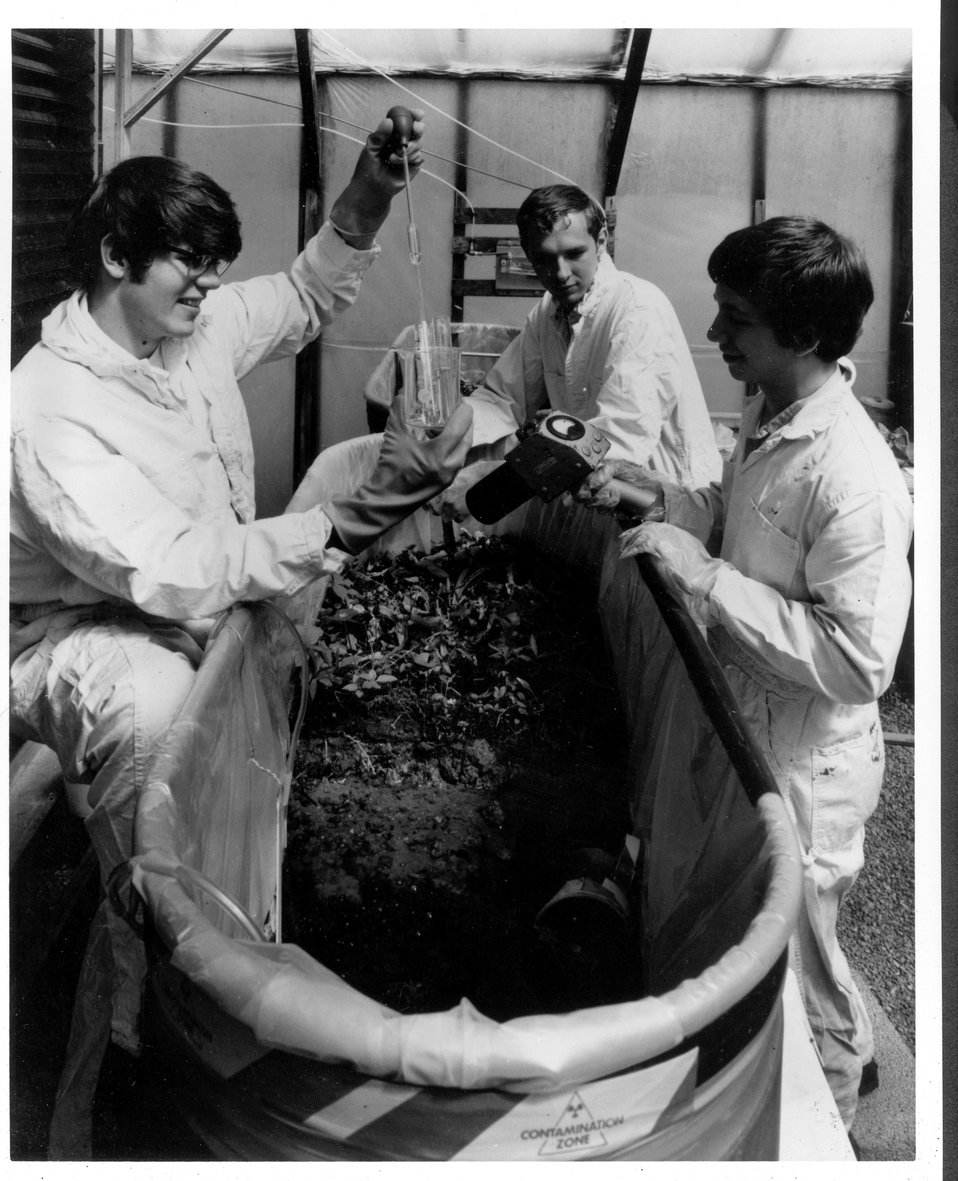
These Emory University undergraduate students in ecology are working on a research project on the movement of radio cadmium through a closed, macro-level, land-water ecosystem at the Ecological Sciences Division of the U.S. Atomic Energy Commission's Oak Ridge National Laboratory (Tenn.) under the Undergraduate Research Training Program. c. 1972